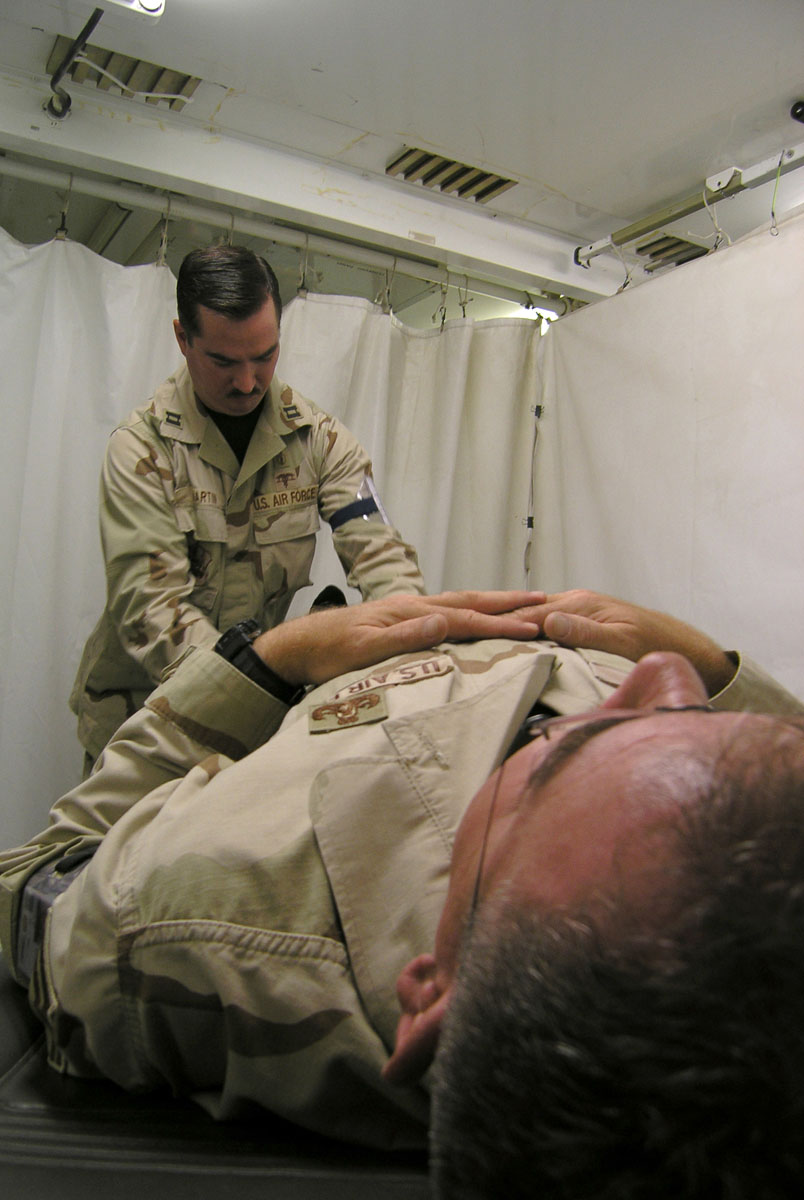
Operation Iraqi Freedom

ALI BASE, Iraq -- Capt. Tony Martin evaluates a patient in the new expanded base clinic here. Captain Martin is the 777th Expeditionary Airlift Squadron medical clinic orthopedic physician assistant.